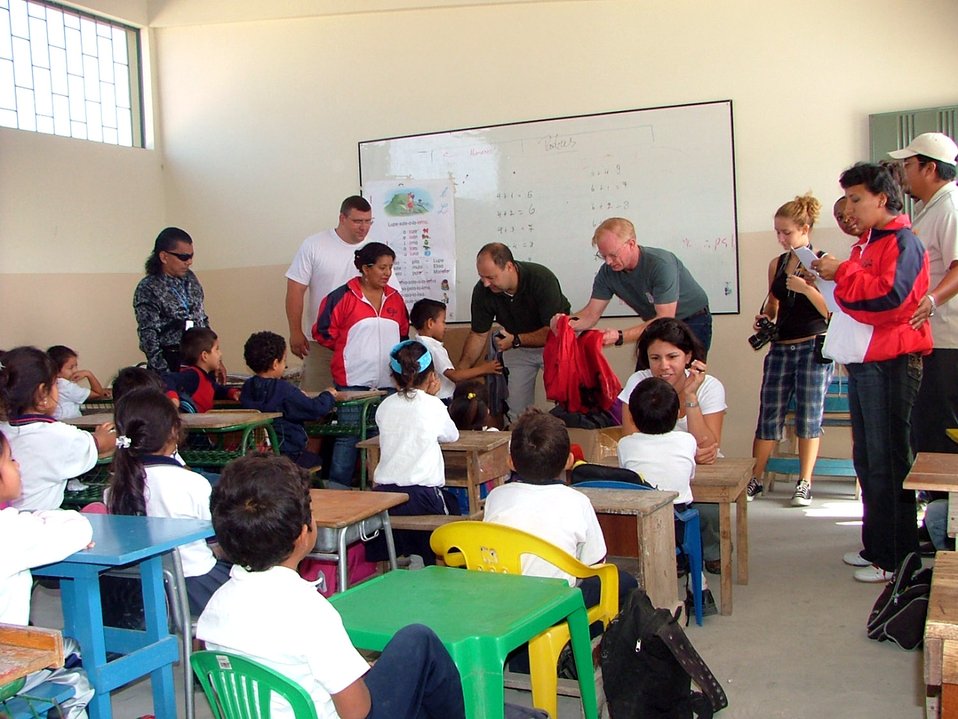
Airman support local community at Manta FOL

Airmen from Forward Operating Location Manta, Ecuador, hand out backpacks Jul. 26 at Jose Peralta School as part of